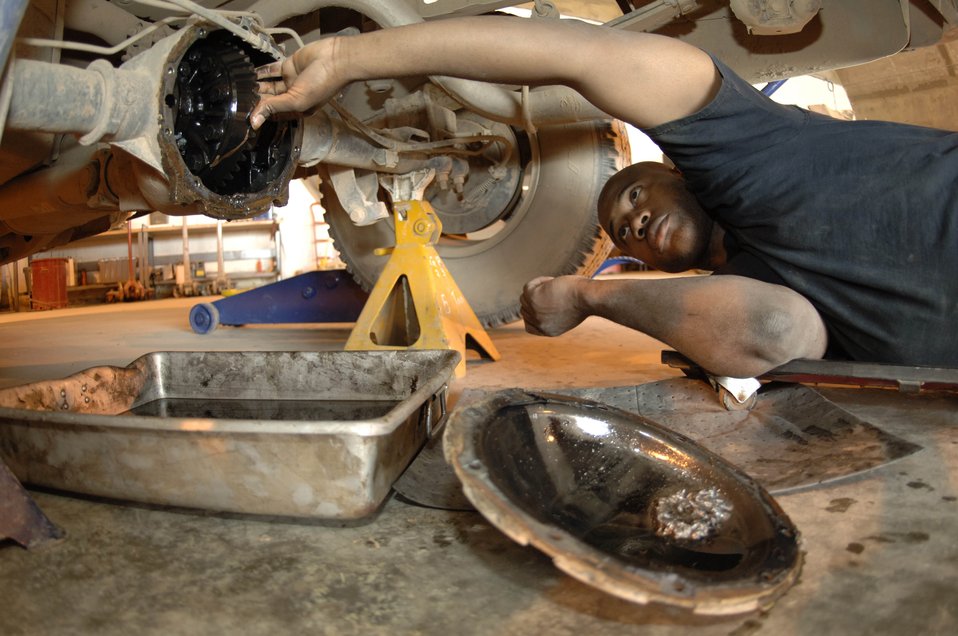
Keep 'em moving

BALAD AIR BASE, Iraq -- Staff Sgt. Marriu Wallace performs maintenance on the rear end of a pickup truck here recently. Sergeant Wallace is assigned to the 332nd Expeditionary Logistics Readiness Squadron.